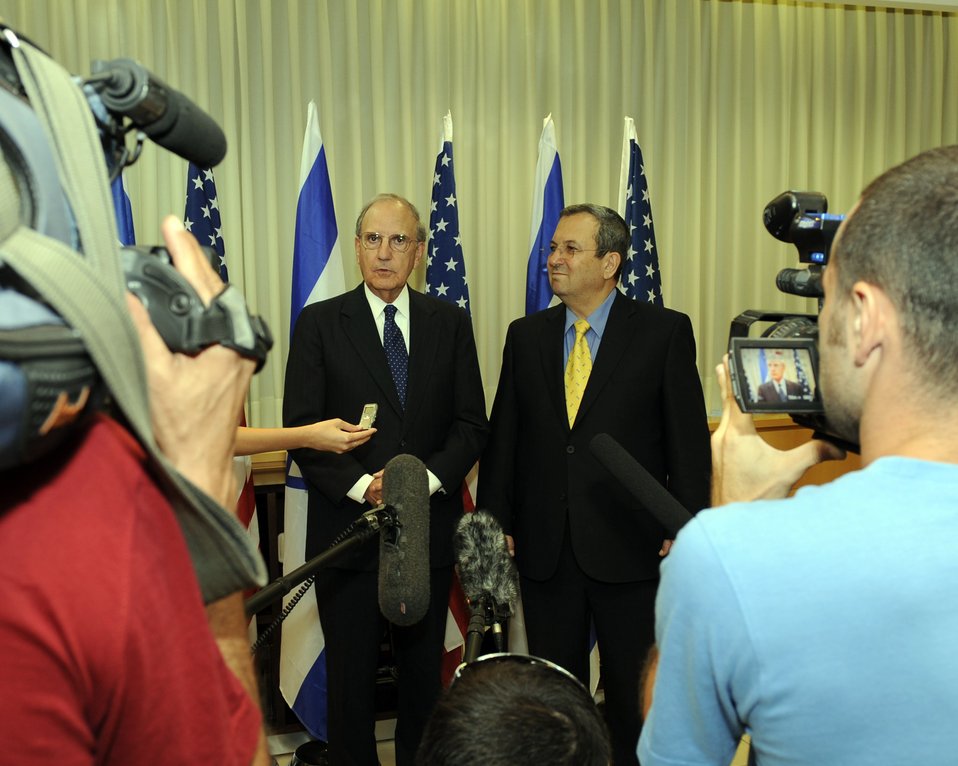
U.S. Special Envoy George Mitchell Meets With Israeli Defense Minister

U.S. Special Envoy George Mitchell with Israeli Minister of Defense Ehud Barak before their meeting in Tel Aviv, Israel July 26, 2009.